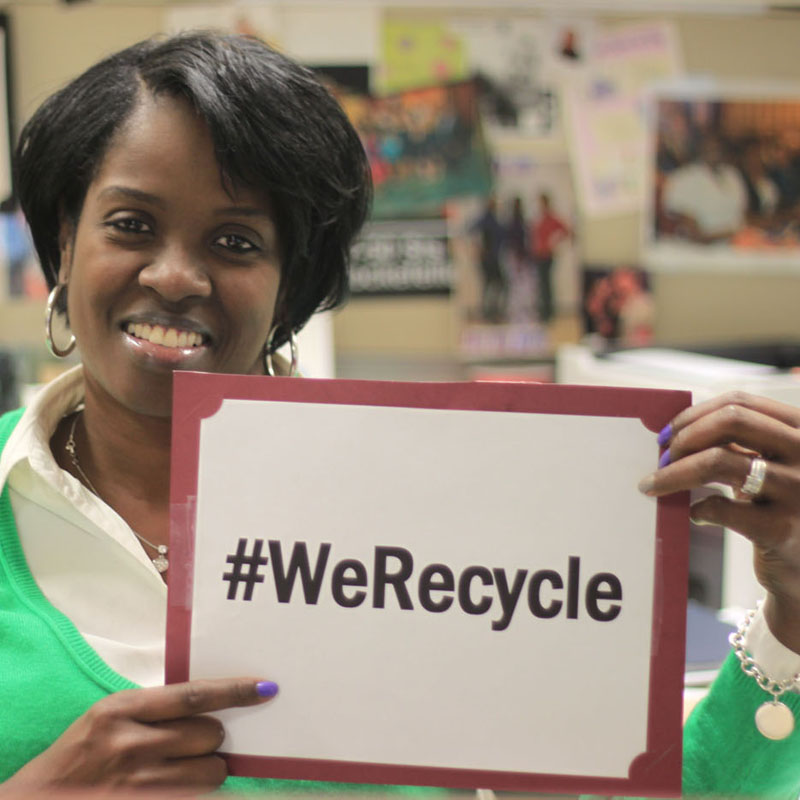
EPA Employee Valerie Recycles

At EPA, #WeRecycle. Learn how you can too: www2.epa.gov/recycle